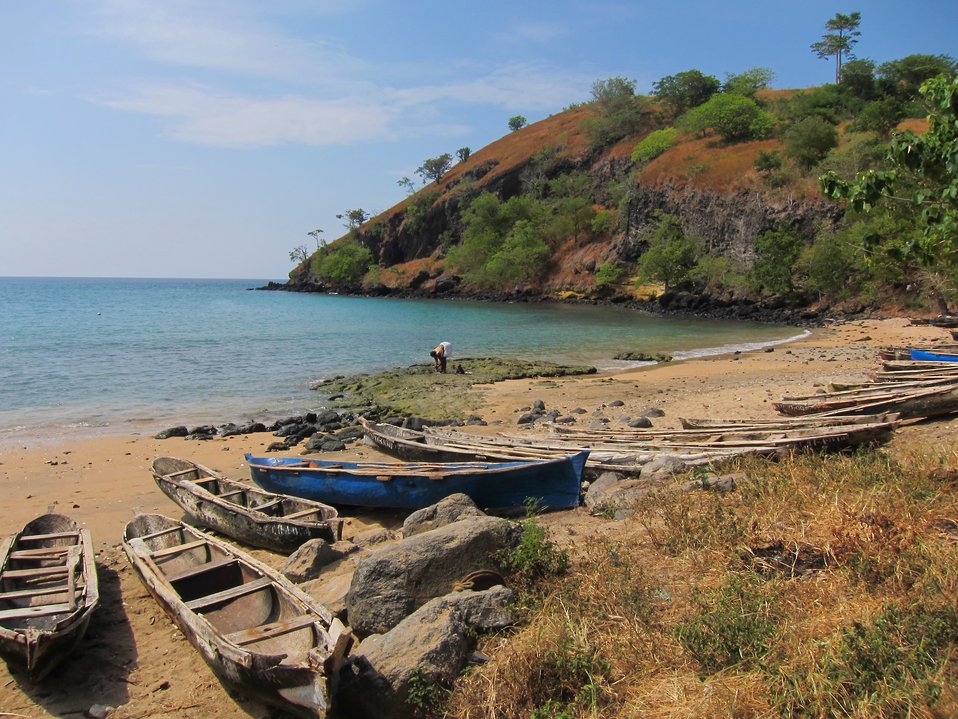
Sao Tomean artisanal fishing boats